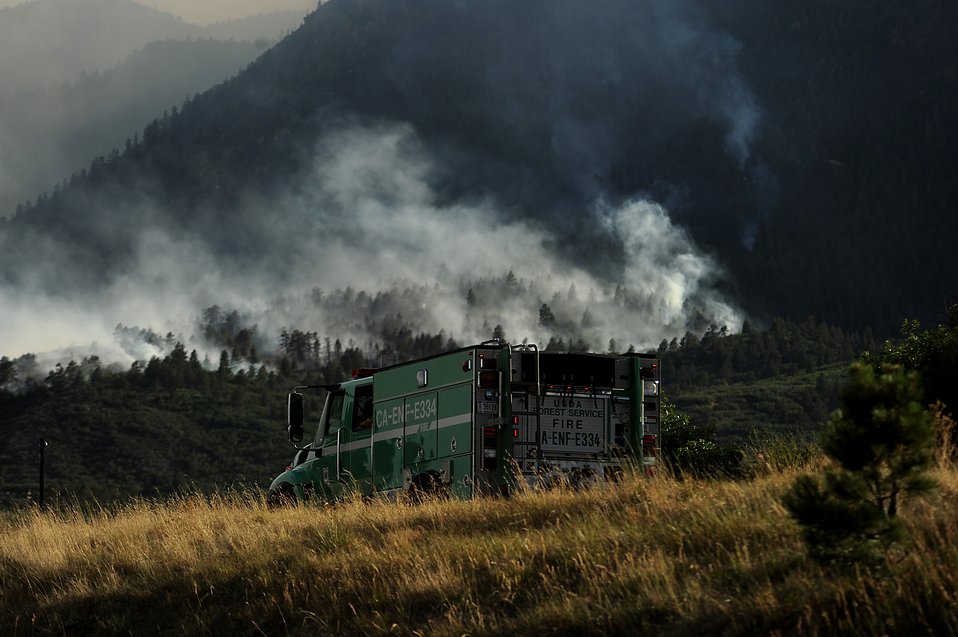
Waldo Canyon Fires

Firefighters head to the front line as they continue to battle several fires that burned into the evening hours in Waldo Canyon on the U.S. Air Force Academy June 27, 2012. The fires, which have burned more than 15,000 acres, began spreading to the southwestern corner of the Academy in the early morning, causing base officials to evacuate residents. Currently, more than 90 firefighters from the Academy, along with assets from Air Force Space Command; F.E. Warren Air Force Base, Wyo.; Fort Carson, Colo.; and the local community continue to fight the fire.